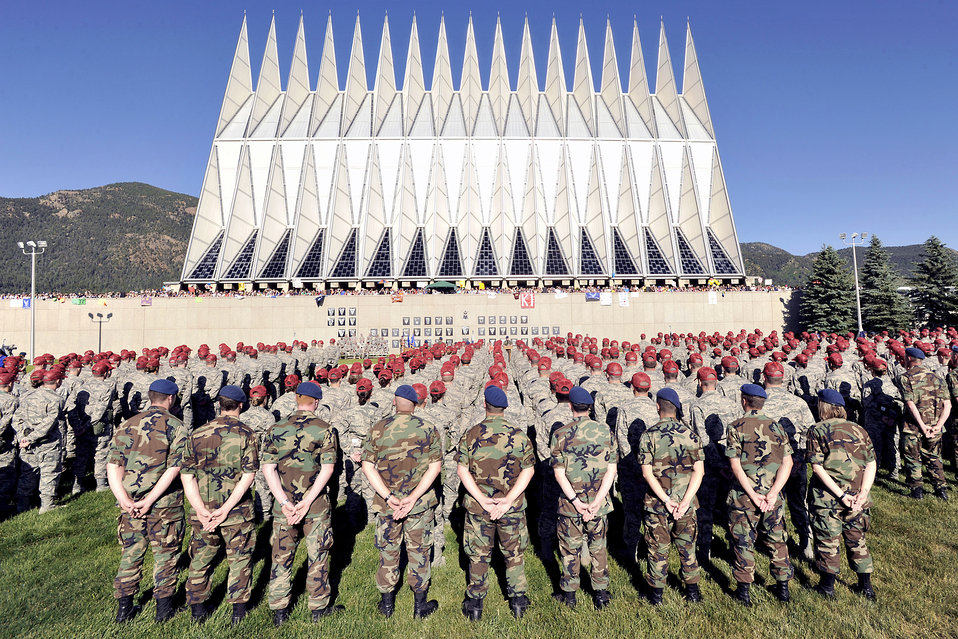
Air Force Academy's Class of 2014

Basic cadets with the Air Force Academy's Class of 2014 prepare to take their oath of allegiance during a swearing-in ceremony June 25, 2010, at the U.S. Air Force Academy, in Colorado Springs, Colo.